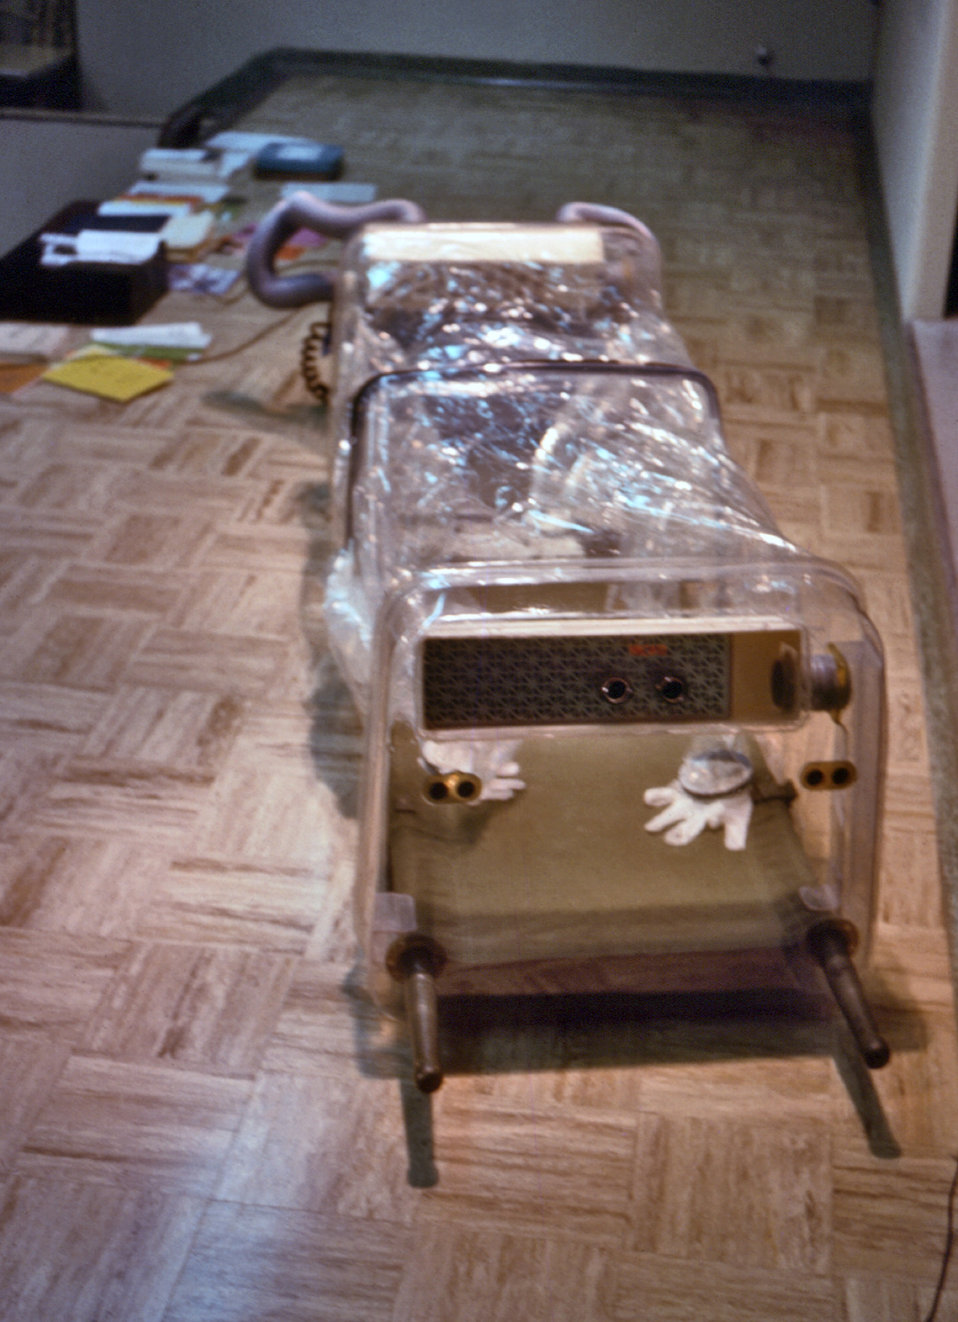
This Bed Isolator, produced by Vickers Medical Ltd., was on display in 1977 at the CDC. Isolation units like this one was used at Brooks Air Force Base in Houston, Texas.